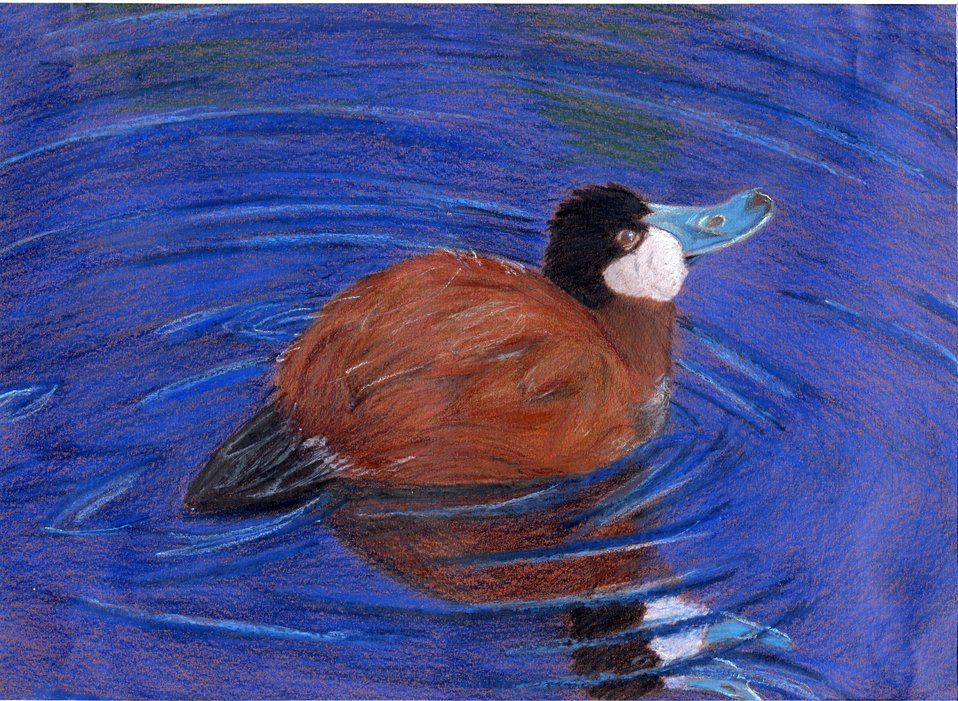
Maine

2012 Jr Duck Stamp Program
State Best of Show
Maine